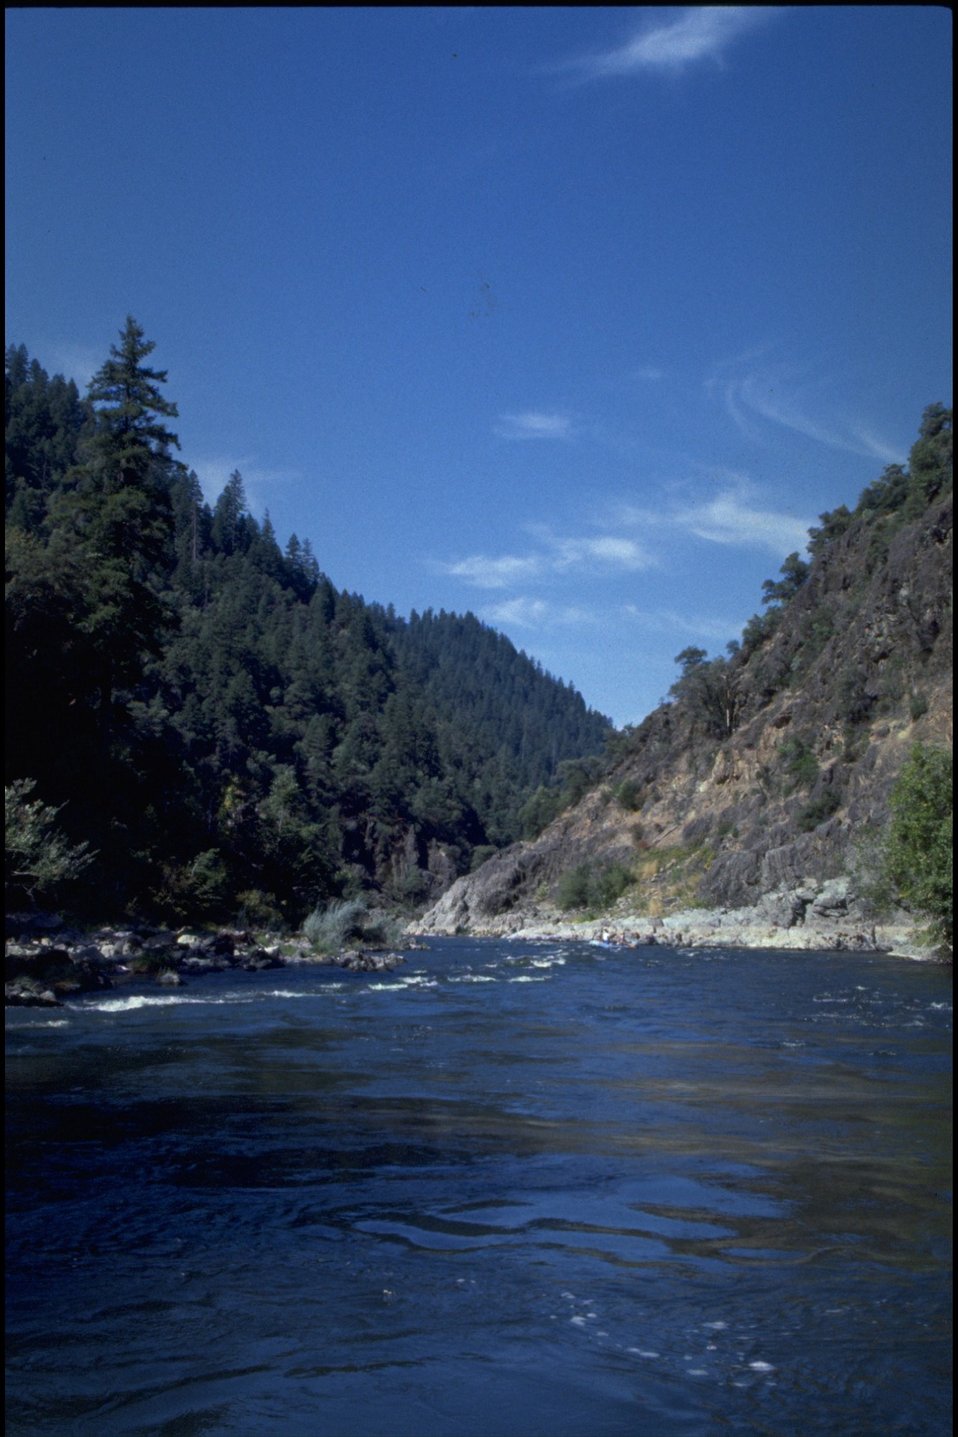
Rogue River - Below Sanderson's, wild section.